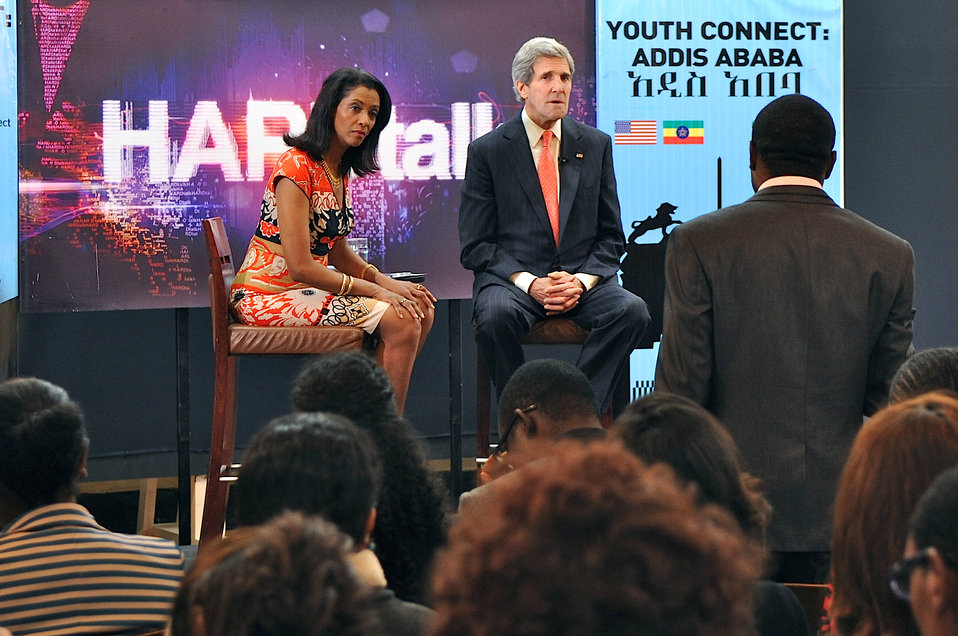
Secretary Kerry Listens to a Question During a Youth Connect Event in Addis Ababa

U.S. Secretary of State John Kerry listens to an audience member ask a question during a special joint BBC 'HARDTalk' and State Department Youth Connect program focused on youth issues at the University of Addis Ababa, Ethiopia, on May 26, 2013.